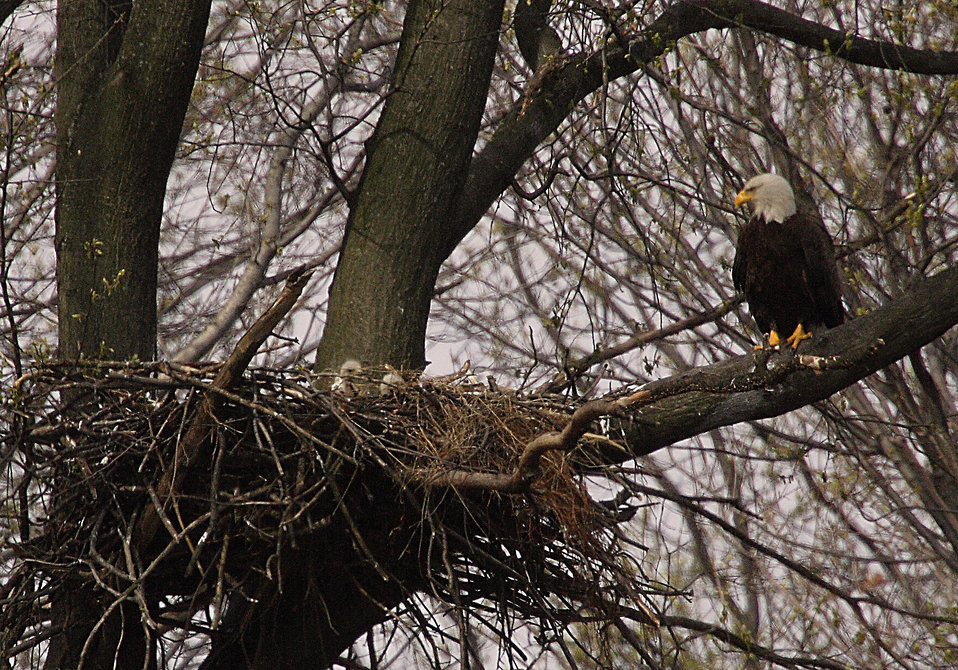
Photo of the Week - Bald eagle with young at John Heinz National Wildlife Refuge (PA)

Photo of the Week - 4/6/10

Bald eagles have successfully nested and hatched two chicks at John Heinz National Wildlife Refuge for the first time in the history of the refuge! John Heinz NWR is located in Philadelphia, PA.